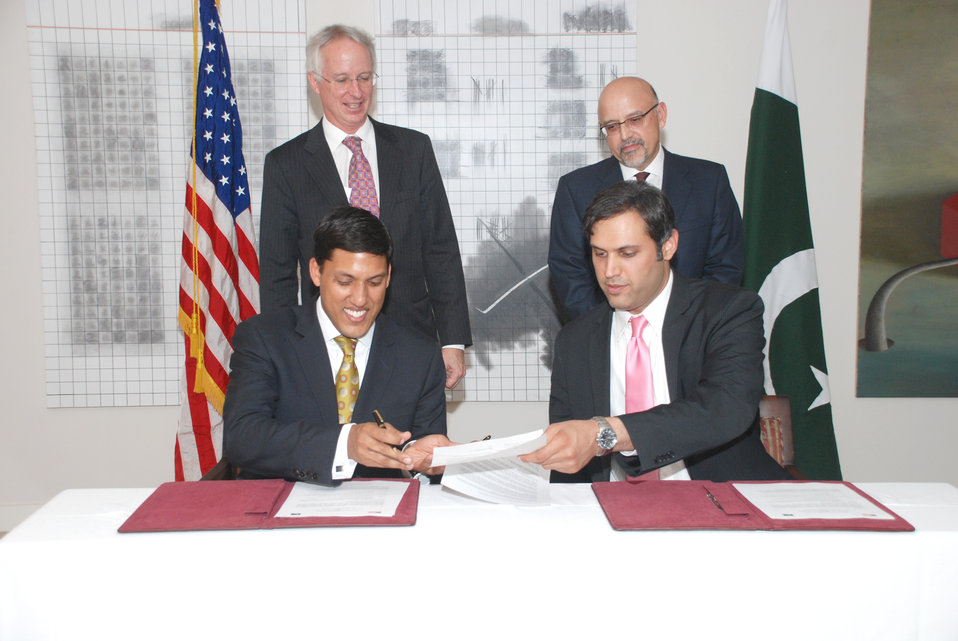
MoU Signing Ceremony between USAID and APF at Islamabad on April 18, 2012

MoU Signing Ceremony between USAID & APF and Dr. Rajiv Shah & Mr. Awais Khan is signing the MoU